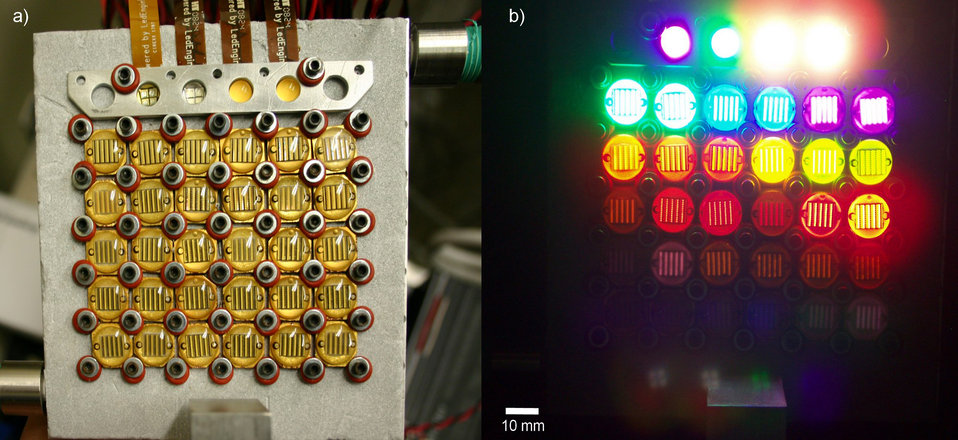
Solar Device

Sections of the new NIST measurement system's LED plate are shown. A water-coolant system on the back (a) keeps the operating temperature constant. Collectively, the different-colored LEDs (b) generate light in wavelengths covering much of the solar spectrum. LEDs in the second row from the bottom emit most of their radiation in the near infrared region and appear very faint to the human eye. Light from the last row of LEDs is completely invisible.